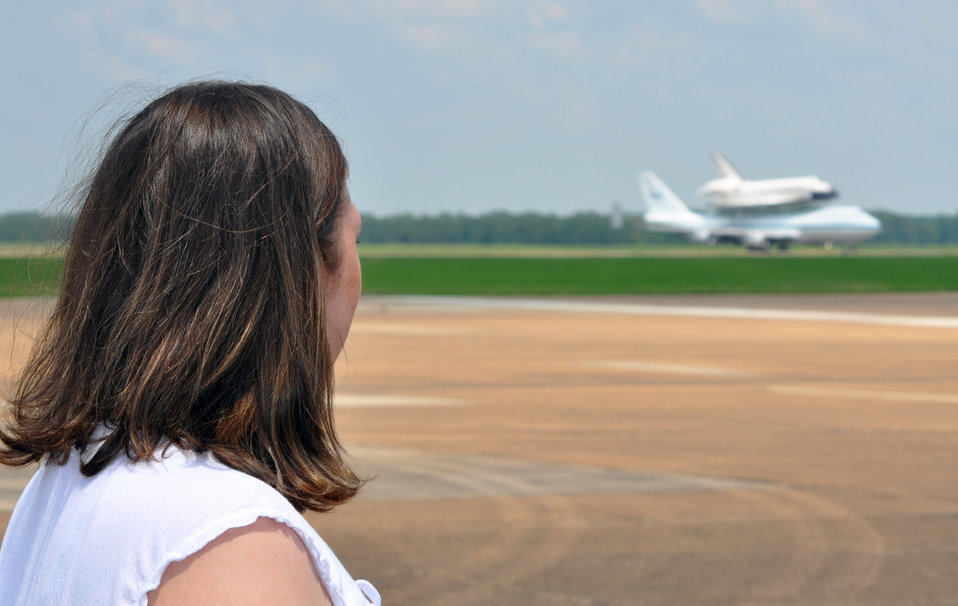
Photo essay: Shuttle transitions through Air Force bases

090602-F-5506C-338.jpg
Erinn Benge watches as Space Shuttle Atlantis, riding atop a modified Boeing 747 Shuttle Carrier Aircraft, taxies after landing June 2 at Columbus Air Force Base, Miss. Columbus AFB was the shuttle's final stop for fuel before finishing its journey to Kennedy Space Center, Fla. Ms. Benge is wife of Master Sgt. Warren Benge, the 14th Force Support Squadron first sergeant. .